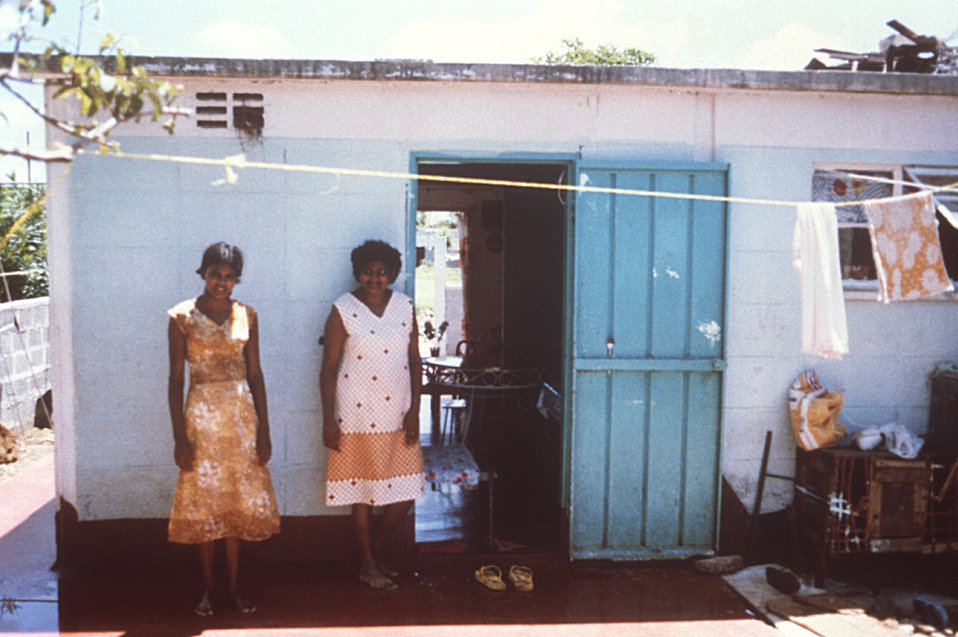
This home and its residents were photographed in 1980 during a Cite' Roche Bois, Mauritius typhoid outbreak investigation.